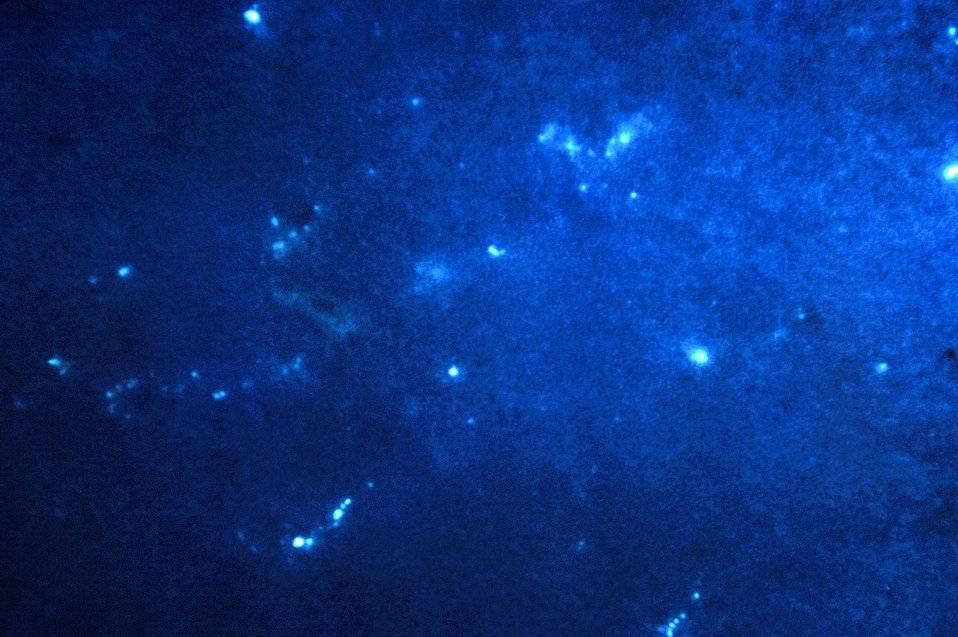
Rabies viral antigen

Using a direct fluorescent antibody (DFA) stain, this photomicrograph revealed the presence of rabies viral antigen in a tissue sample harvested from a fox's brain, specifically the hippocampal region, suspected of being infected with rabies.